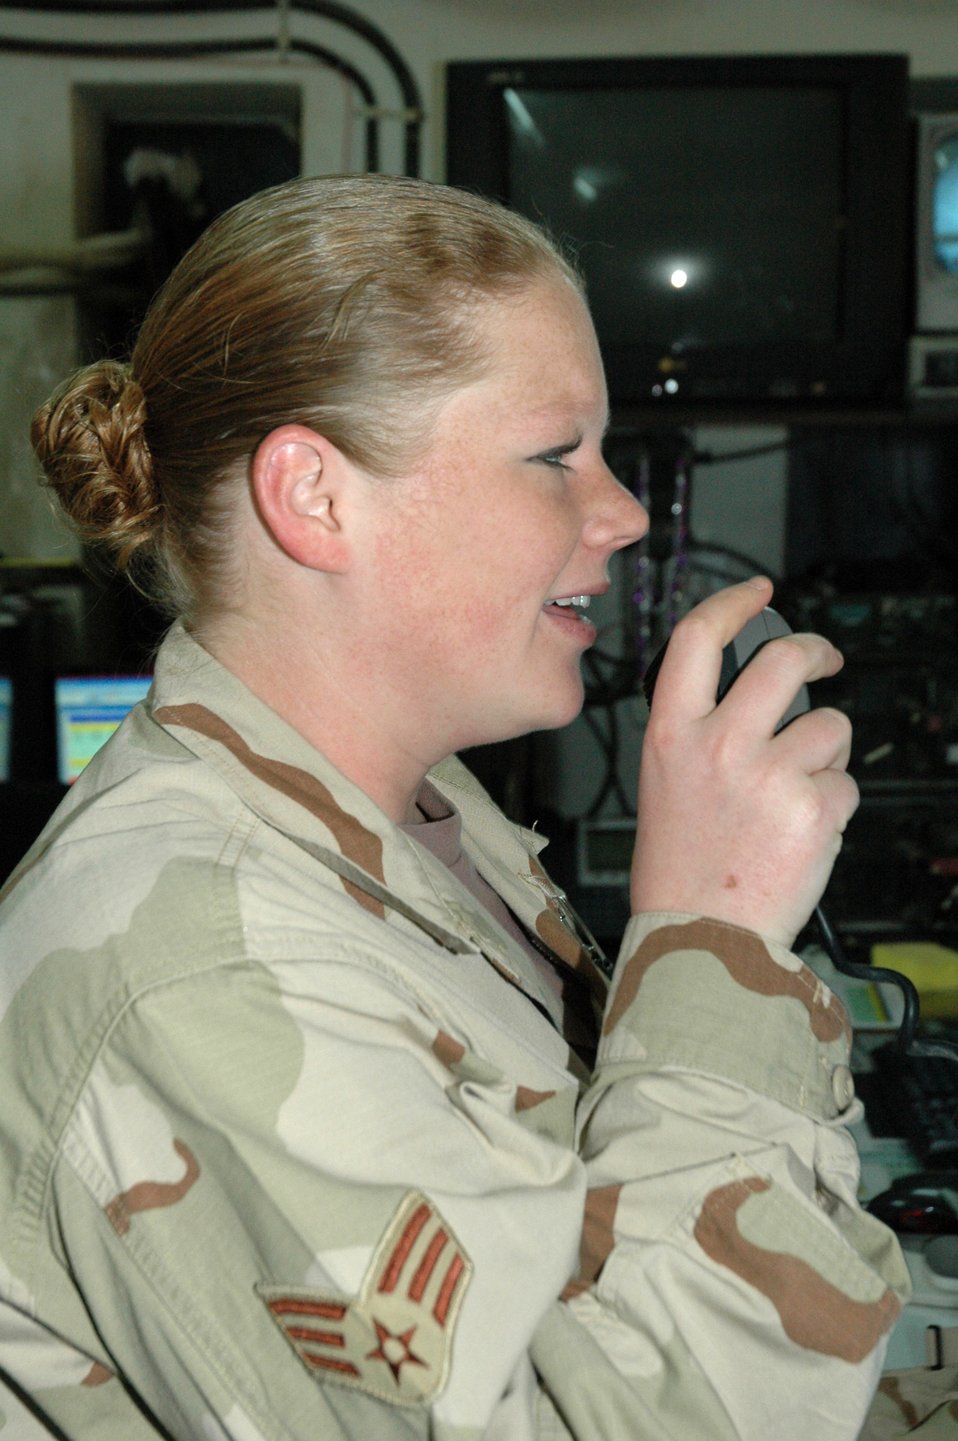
Serving through the season: Senior Airman Lindsey Dawson

Senior Airman Lindsey Dawson is a command post controller for the 506th Air Expeditionary Group at Kirkuk Air Base, Iraq.